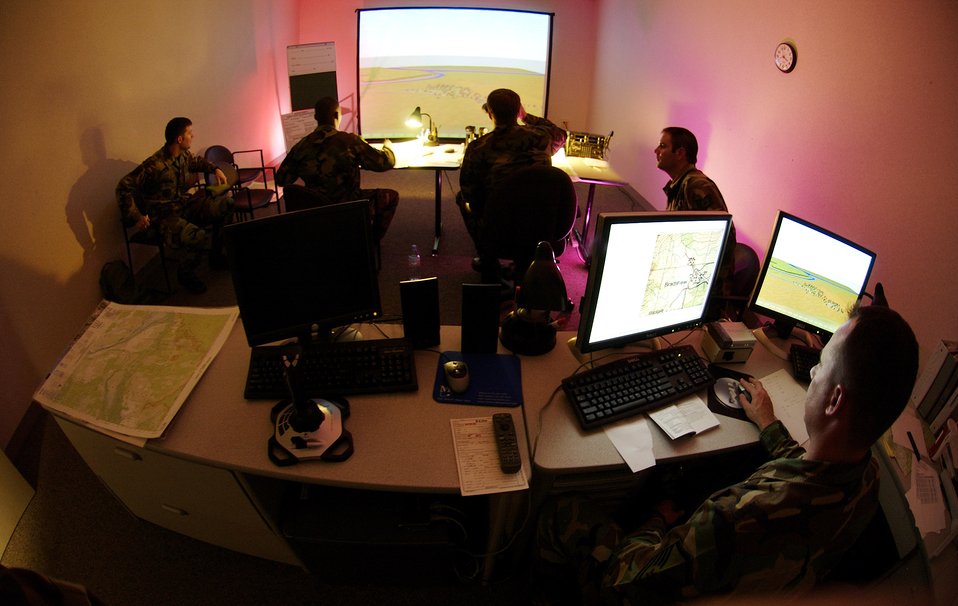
JTACs sharpen war skills in Nevada

Joint terminal attack controllers receive detailed instruction and training on tactics, techniques and procedures for requesting, coordinating and controlling airpower in tactical operations on the joint battlefield as Master Sgt. Craig Hillsman (foreground), a 6th Combat Training Squadron instructor at Nellis Air Force Base, Nev., observes. JTACs are recognized throughout the U.S. military as experts in air-to-ground operations.